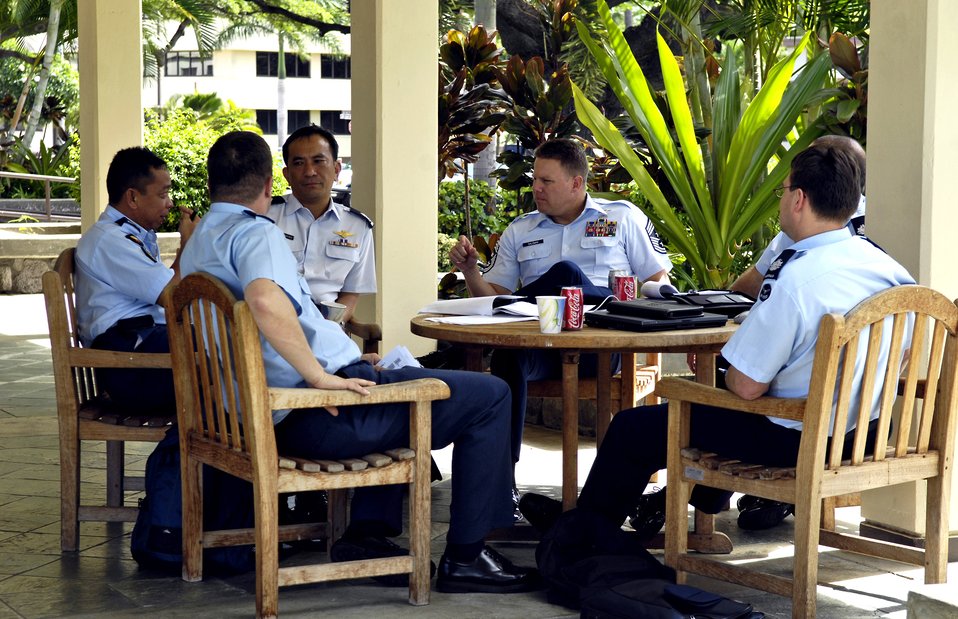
Communicating at PACRIM

Representatives for the enlisted force discuss capabilities, commonalities and training opportunities during a break out session of the Pacific Airpower Symposium Sept. 19 at the Aloha Conference Center at Hickam Air Force Base, Hawaii. The PACRIM Symposium provides a forum to communicate the value of U.S. engagement with nations of the Asia-Pacific region and the United States' commitment to the region to internal, local, national and regional audiences.